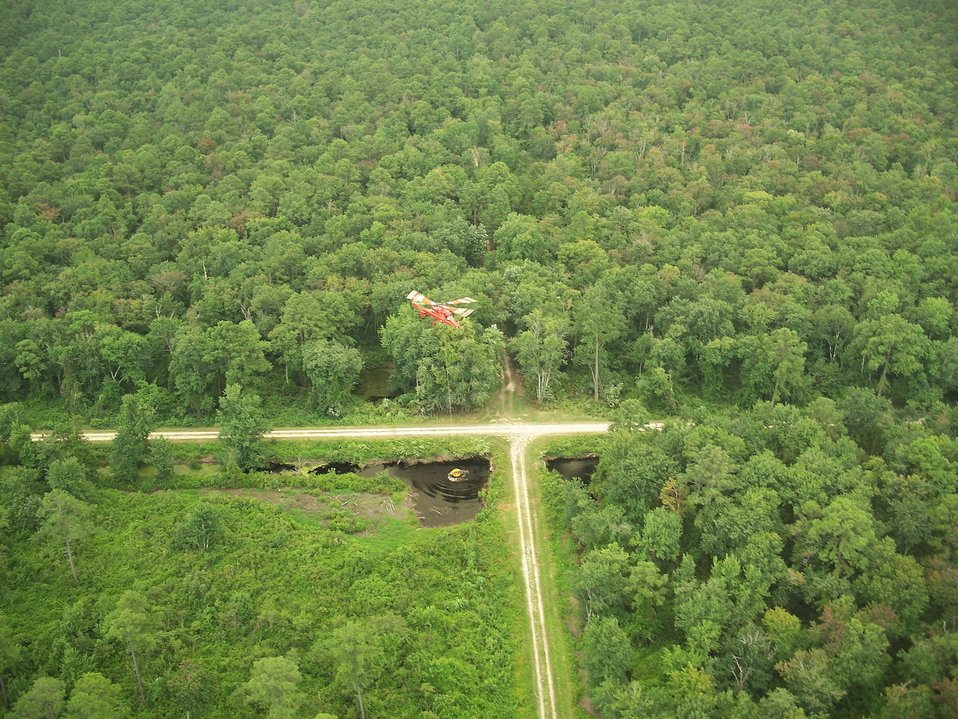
Helicopter dip Lateral West

Suffolk, VA, August 2011: A helicpoter recharges a bucket of water to cool the Lateral West wildfire burning on Great Dismal Swamp National Wildlife Refuge. Air operations support ground operations to contain the fire.